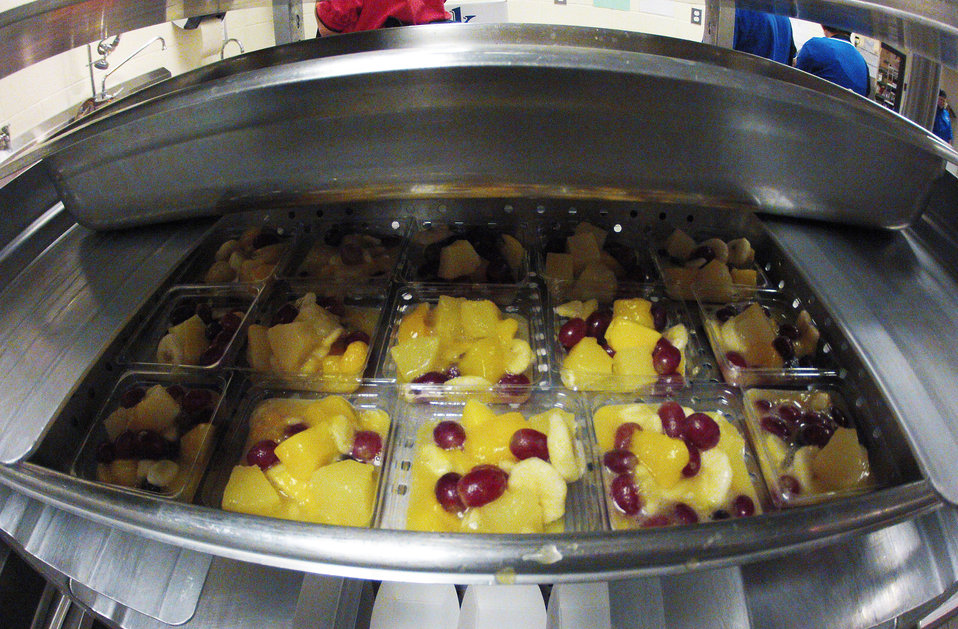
School lunch staff and students enjoy the new school lunch menu created to meet the new standards at the Yorkshire Elementary School in Manassas, VA on Friday, Sept. 7, 2012.